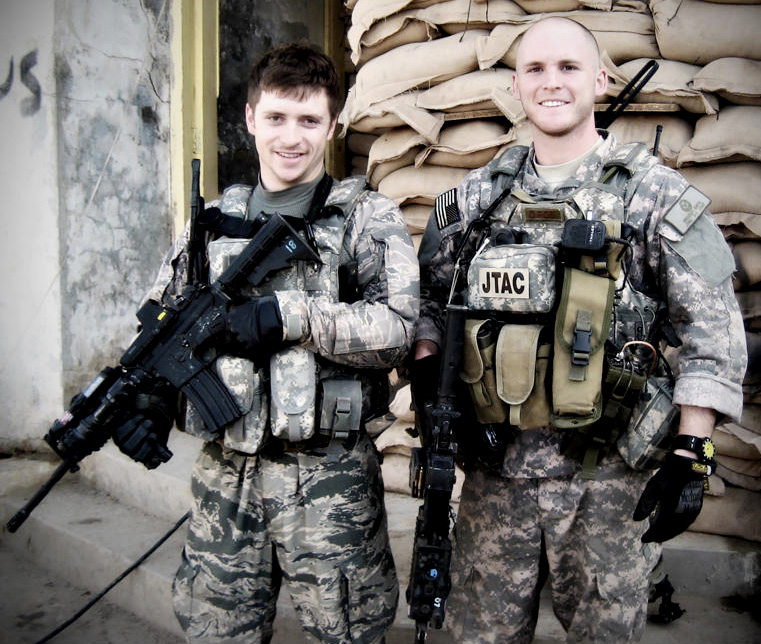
TACP killed, another injured

Senior Airmen Mike Malarsie and Bradley Smith pose for a photo during their Afghanistan deployment. An improvised explosive device attack mortally wounded Airman Smith and injured Airman Malarsie Jan. 3, in Afghanistan. The two tactical airlift control party Airmen were assigned to the 10th Air Support Operations Squadron at Fort Riley, Kan.